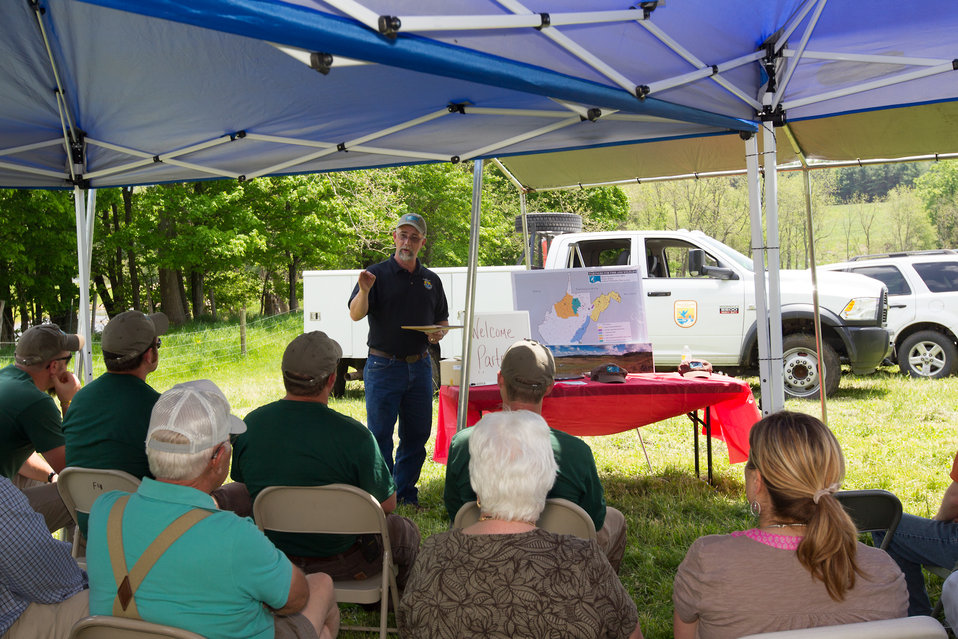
Celebrating 1 Million Feet of Conservation Fence in WV

Partners for Fish and Wildlife Program